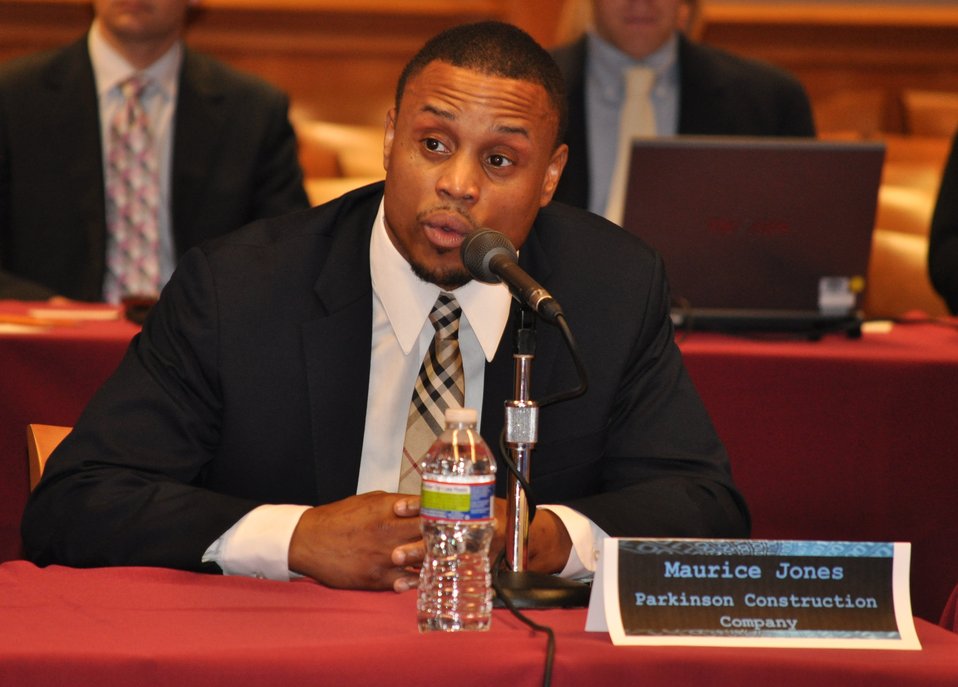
Cybersecurity 5-16

Cybersecurity for Small Business Roundtable; May 16, 2011